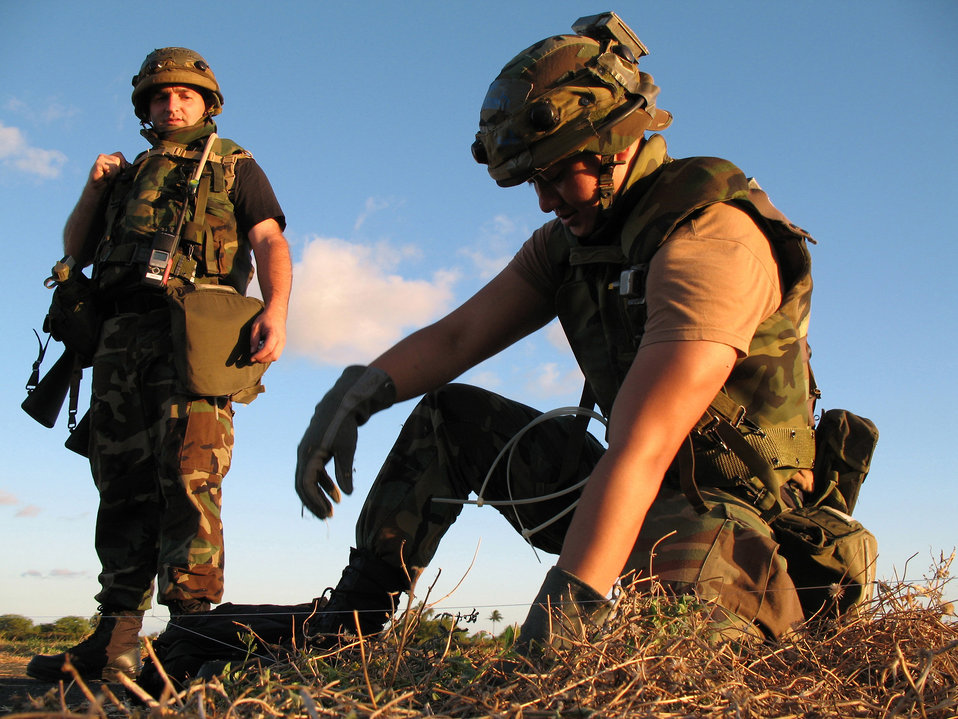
Hawaii air traffic controllers train to fight

Chief Master Sgt. William Stumbo Jr. watches as Senior Airman Julius Valenzuela sets glow stick traps to warn of enemy intrusions during an exercise at Naval Station Barber's Point, Hawaii, on July 25. They are with the Hawaii Air National Guard's 297th Air Traffic Control Squadron.